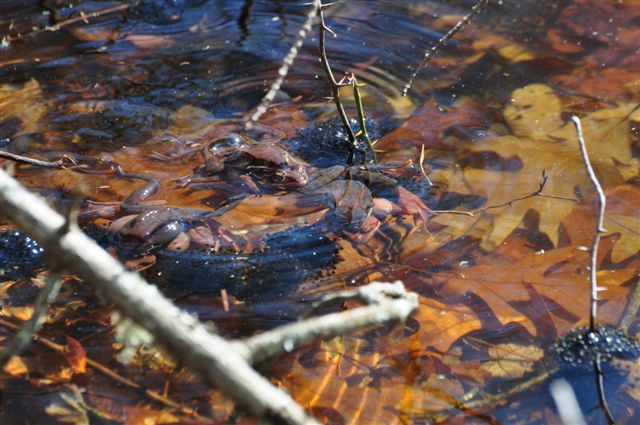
Frogs in the Kettle Pond vernal pool at Ninigret National Wildlife Refuge, Rhode Island.